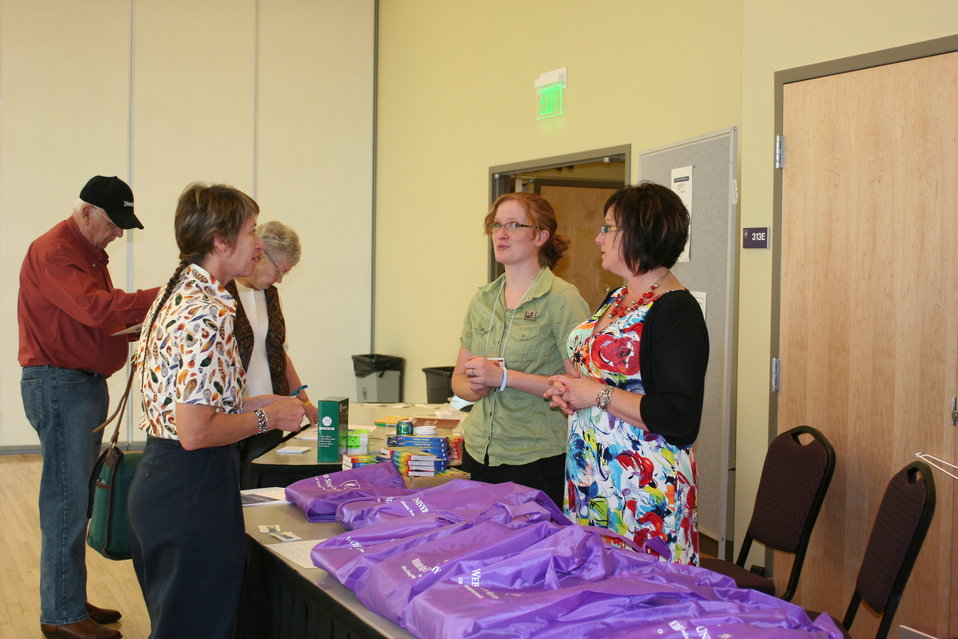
Outreach

Photo Credit: Suzanne Fellows / USFWS
The U.S. Fish & Wildlife Service sponsored the 2012 Federal Duck Stamp Art Contest September 28 and 29 in Ogden, Utah, at Weber State University. A panel of five judges was responsible for choosing the art work used to design the 2013-2014 Migratory Bird Hunting and Conservation Stamp.